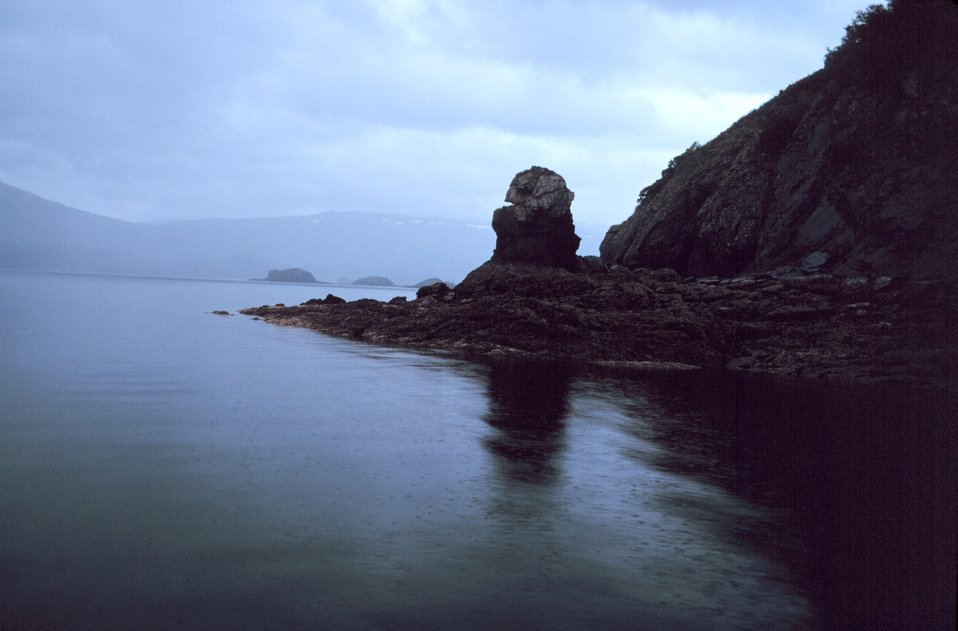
Piridon Bay sea stack.